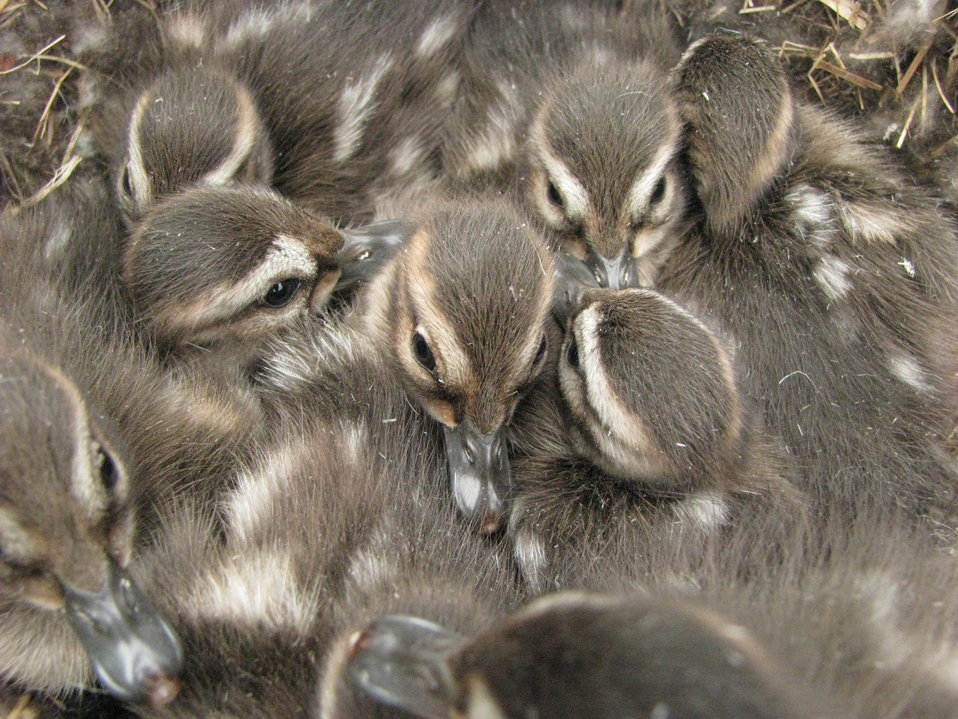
Pintail ducklings

Yukon Delta NWR
This particular brood was hatch right next to the weatherport of one of our field camps. All 9 eggs hatched!